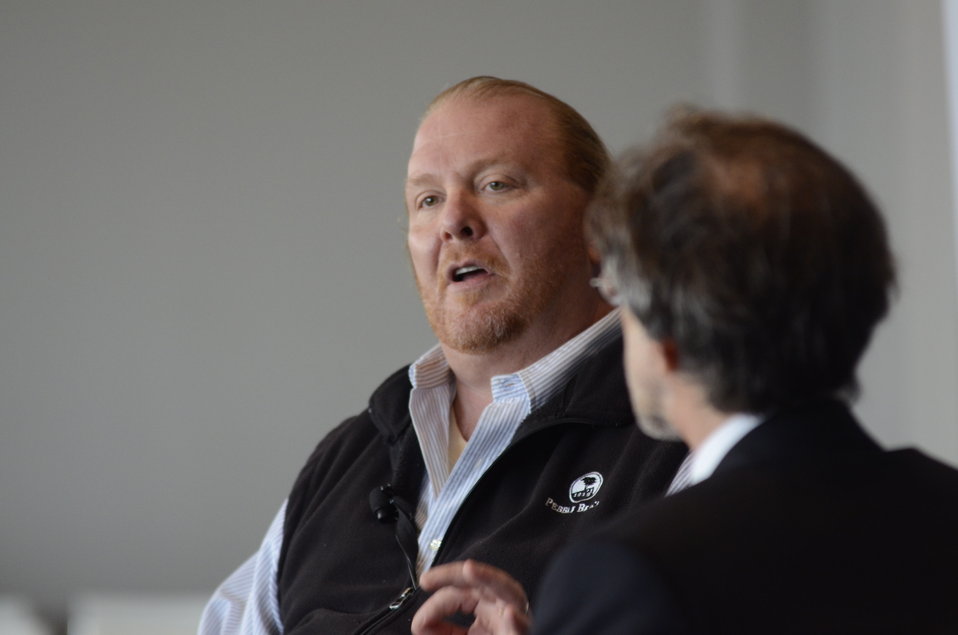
The Atlantic Senior Editor Corby Kummer interviews Chef, restaurateur, author, and television personality Mario Batali at the 3rd Annual Food Summit held at the W Hotel in Washington, D.C. on Thursday, May 24, 2012. The Food Summit event includes interviews, panel discussions and symposia with leading authorities on issues related to food, food security, and nutrition.